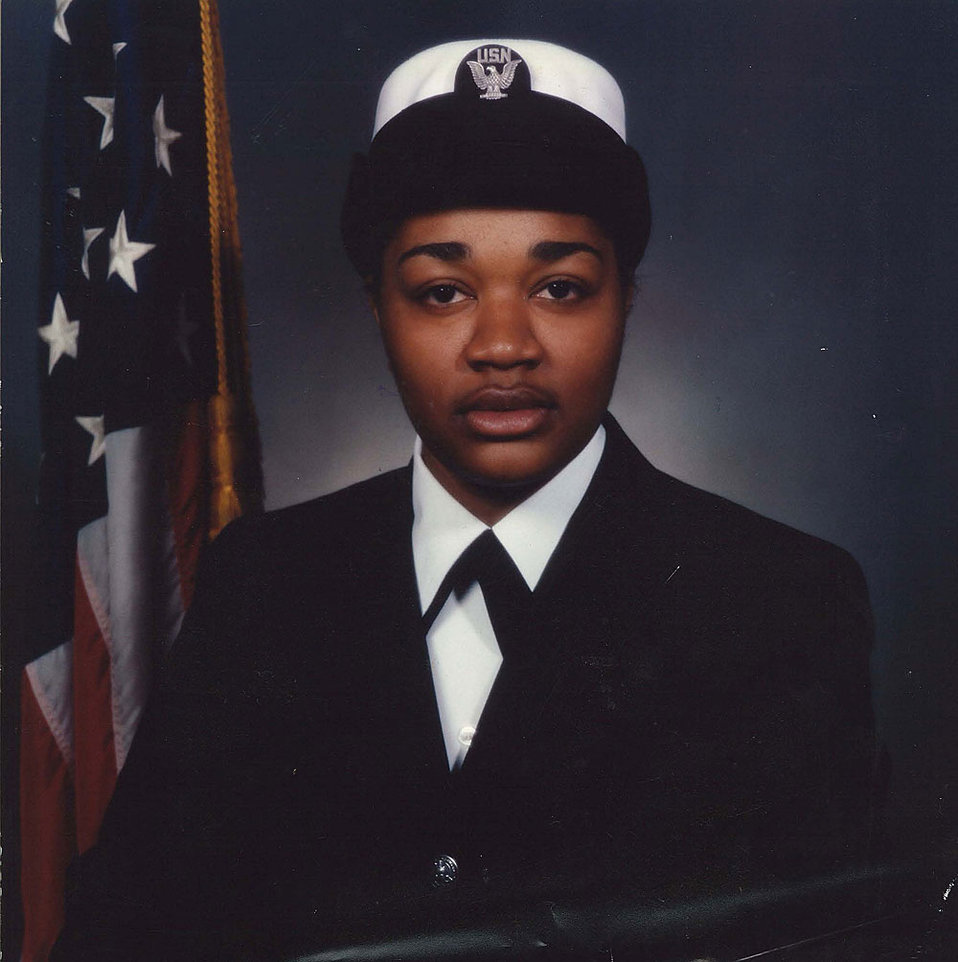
Dontae Adyelott -- HQ

Dontae Adyelott works with Budget, Planning and Human Capital and served with the Navy.